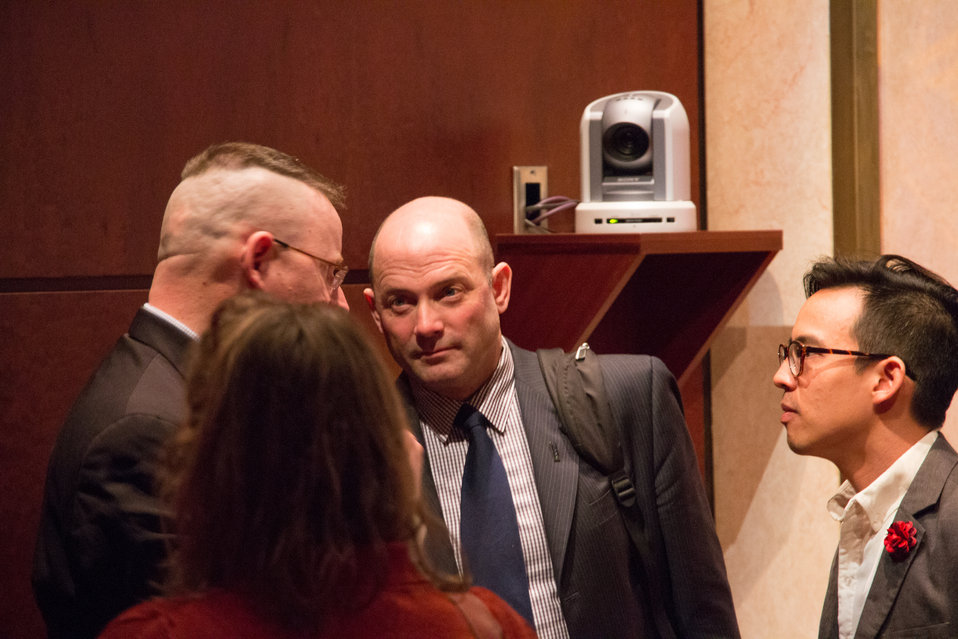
VHAP Launch (395 of 511)